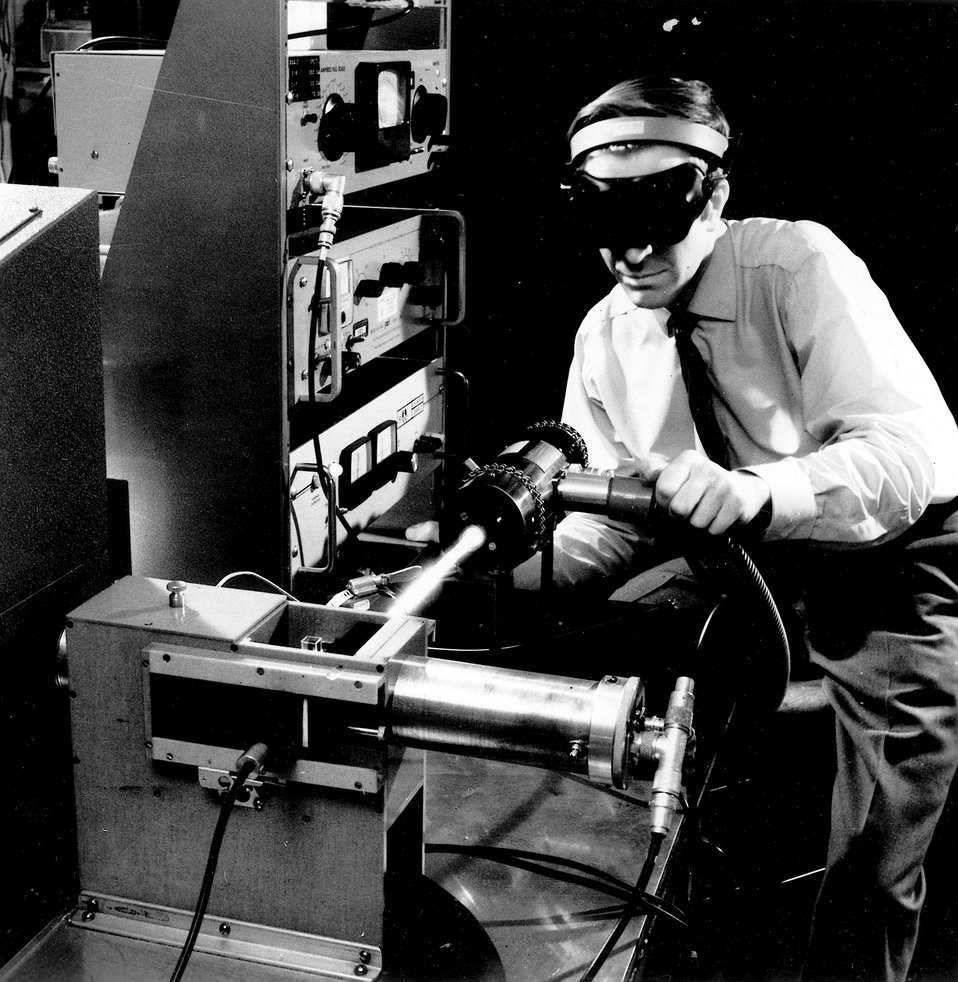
Ever-broadening uses of laser beams were enhanced during 1969 when a more definitive and less restrictive classification on laser information was adopted. c. 1970